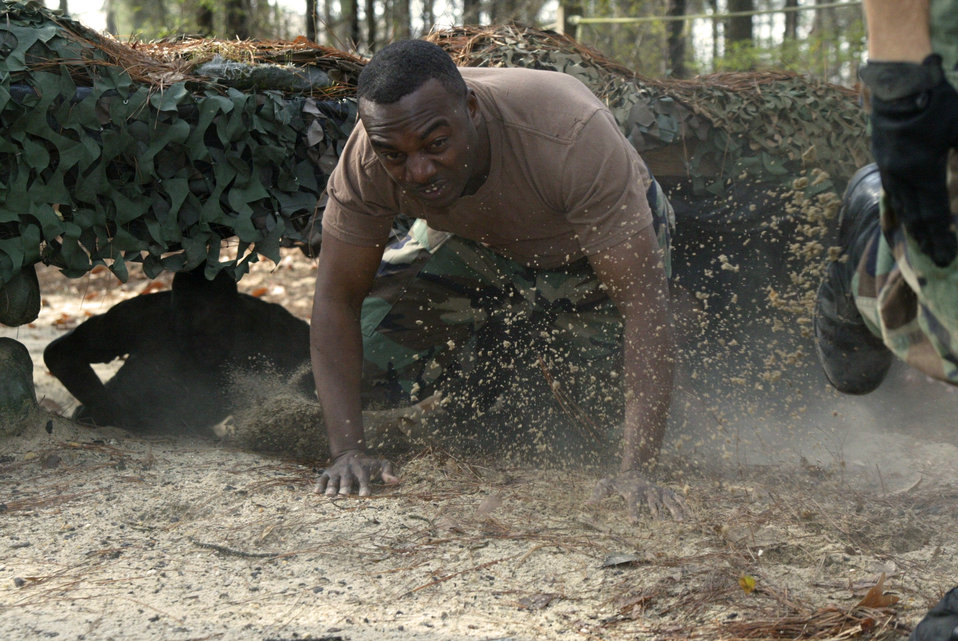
Competition aids Air Force Assistance Fund

POPE AIR FORCE BASE, N.C. -- Master Sgt. Perry Johnson finishes the low crawl obstacle during an Air Force Assistance Fund competition here April 1. The competition, which raised $520 for the fund, included 26 teams from around the base. Sergeant Johnson was part of the 43rd Medical Group team, which finished the course in 5 minutes, 16 seconds.